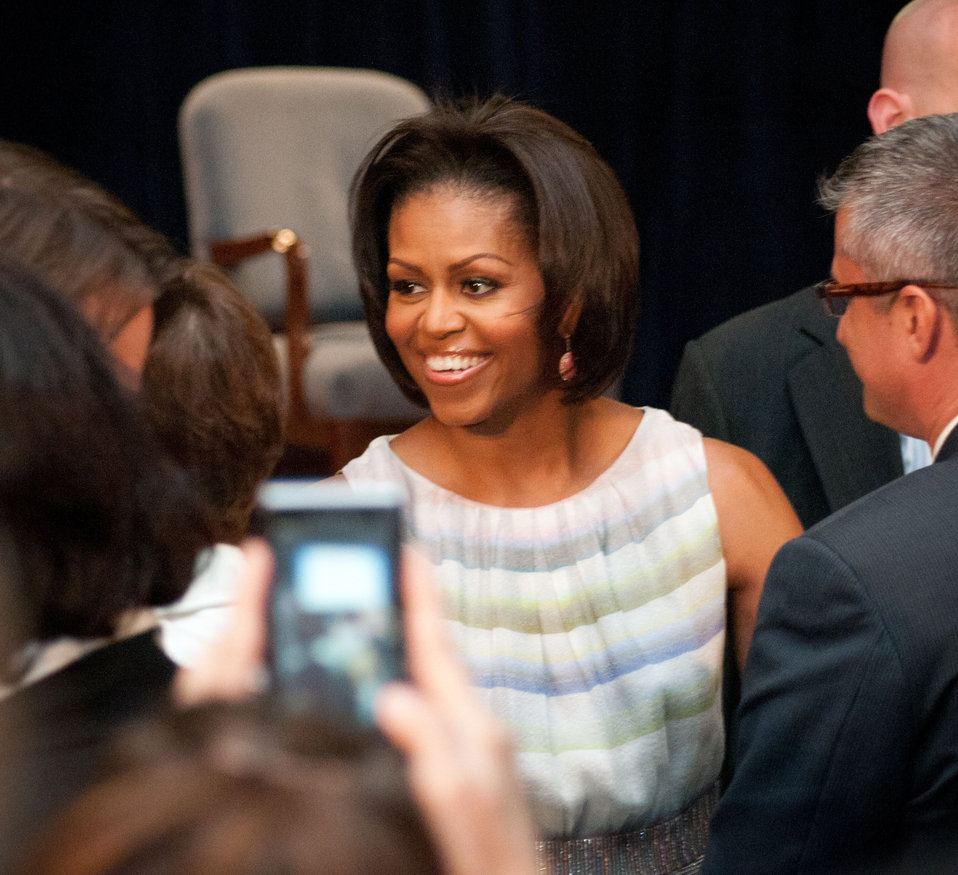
First Lady Michelle Obama met with some of the people responsible for the new Food Icon MyPlate that was announced at the U. S. Department of Agriculture (USDA) in Washington, D.C. on Thursday, June 2, 2011. This new icon will replace the USDA’s MyPyramid image as the government’s primary food group symbol. MyPlate is an easy-to-understand visual cue to help consumers adopt healthy eating habits that are consistent with the 2010 Dietary Guidelines for Americans. MyPyramid will remain available to interested health professionals and nutrition educators in a special section of the new website.